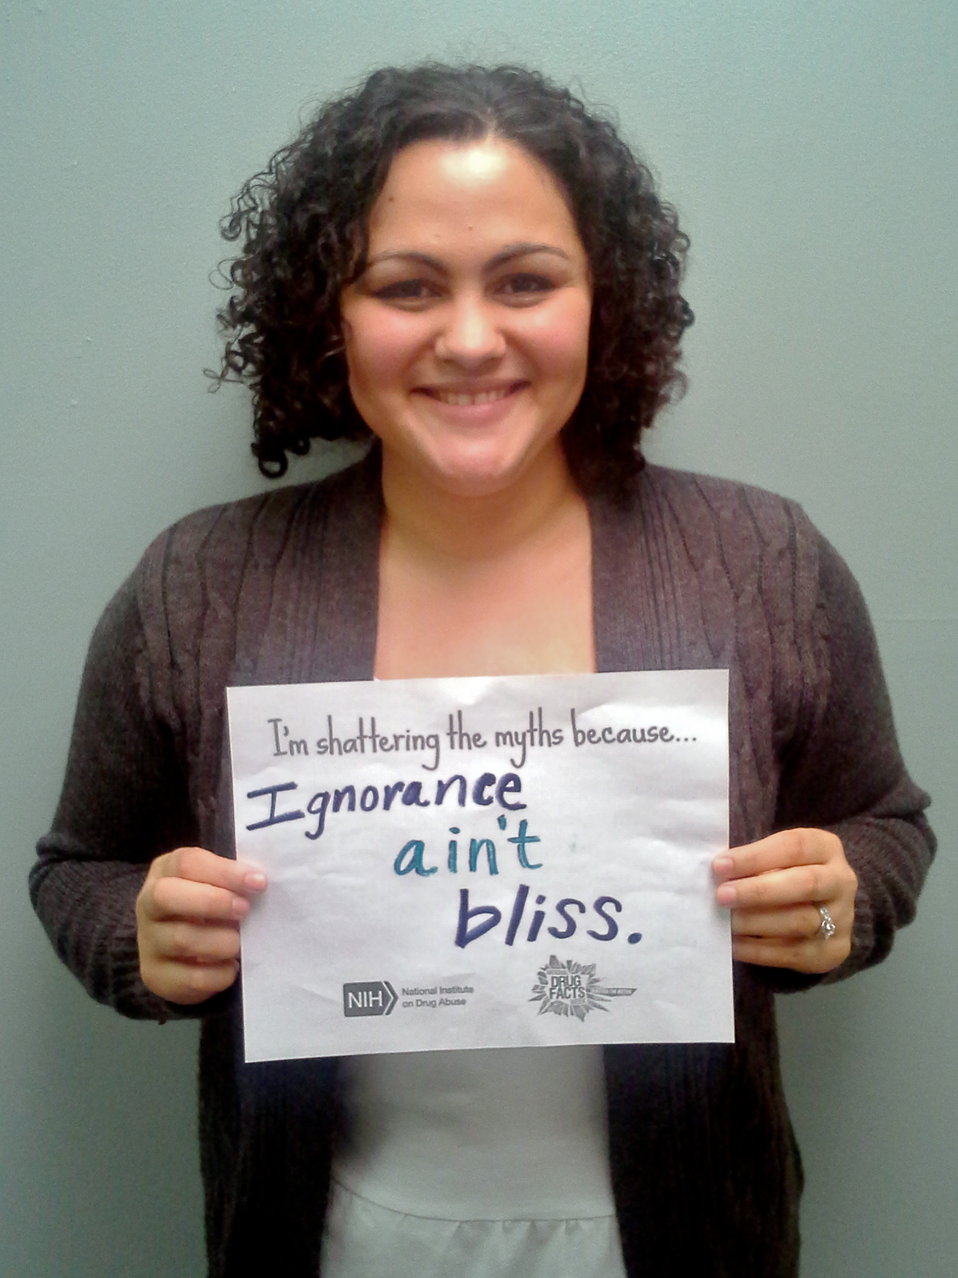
Shattering the Myths campaign in Winona, Minnesota